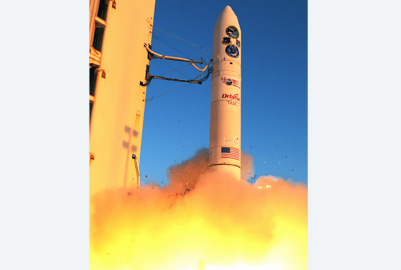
FalconSAT-5 rockets into orbit

A rocket carrying FalconSAT-5 lifts off Nov. 19, 2010 from the Kodiak Launch Complex, Alaska.